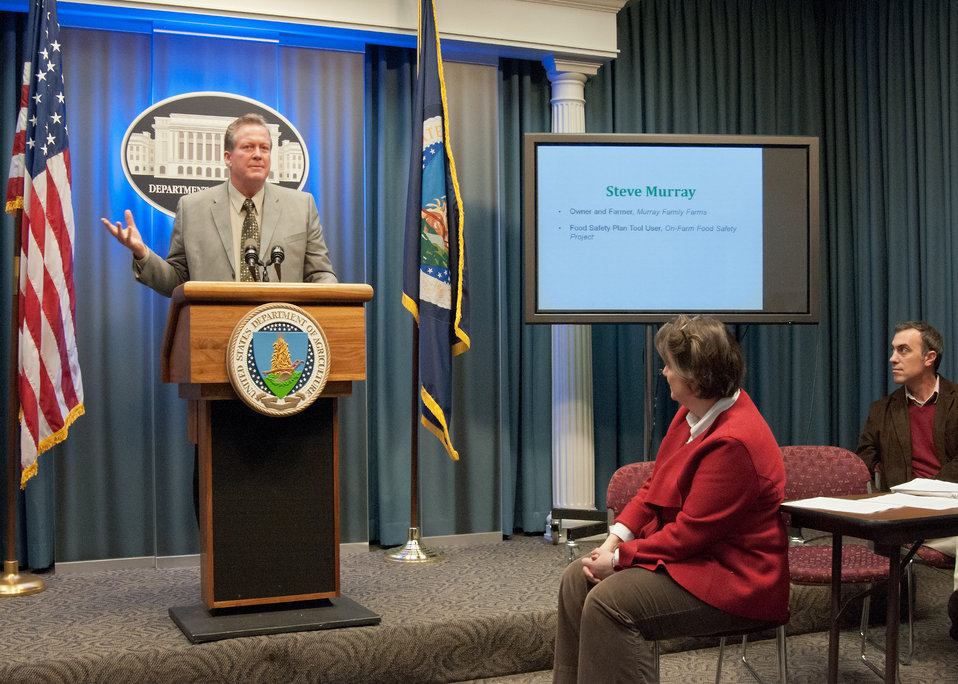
Steve Murray, Murray Family Farms, Bakersfield, CA. a user of the On-Farm Food Safety Project Tool, www.onfarmfoodsafety.org, described a producers experience with the risk management tool and the fact that it saved him thousands in consultant fees. Murray along with Agriculture Deputy Secretary Dr. Kathleen Merrigan and leaders from agriculture and food organizations announced the release of the tool at the United States Department of Agriculture in Washington, D.C., on Thursday, December 15, 2011. To the right are Agriculture Deputy Secretary Dr. Kathleen Merrigan and Phil Petrilli, Regional Director, Chipotle Mexican Grill, a sponsor of On-Farm Food Safety Project. The On-Farm Food Safety Project is the first of its kind and was developed by a broad coalition of farm and produce industry partners with lead funding from the USDA Risk Management Agency.